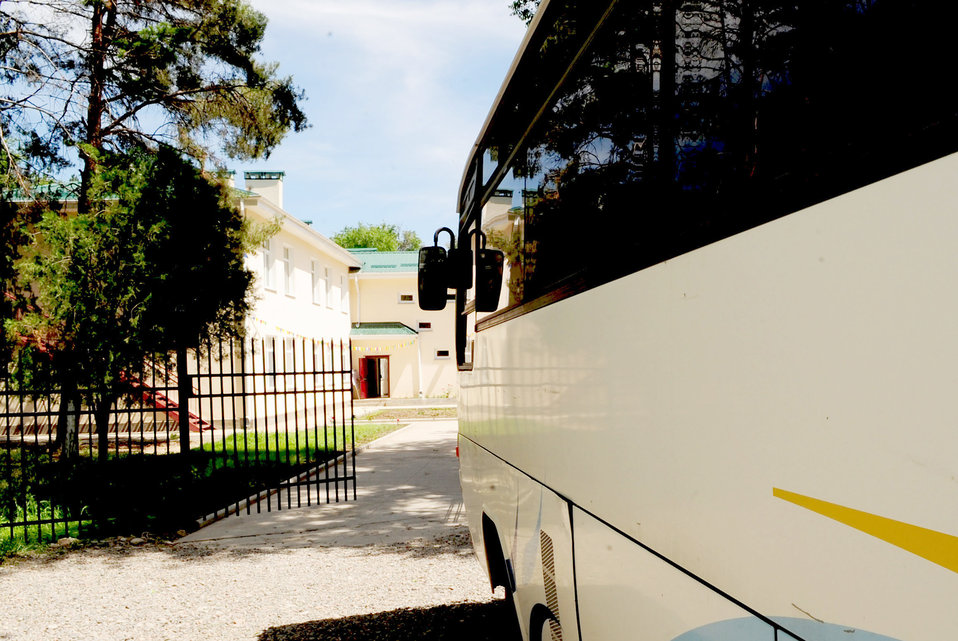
Birdik Village School culminates with ceremony, surprise

A bus sits outside of the Birdik Village School, Kyrgyzstan, after Col. Blaine Holt presented it May 25, 2010, on behalf of the Transit Center at Manas, Kyrgyzstan. Colonel Holt is the director of the Transit Center.